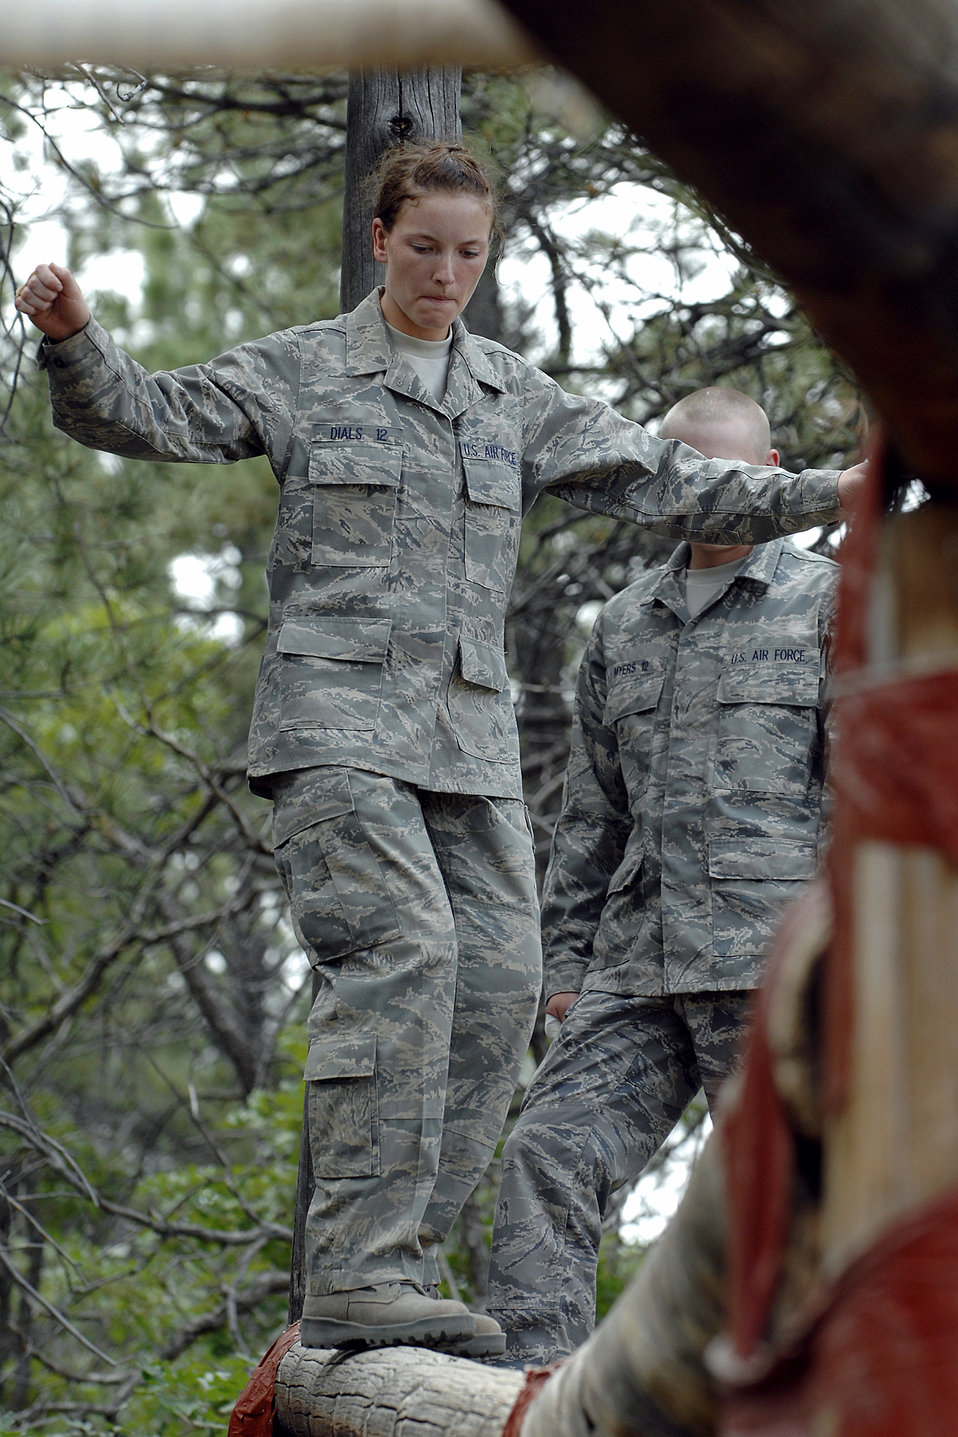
New cadets discover Jacks Valley

U.S. Air Force Academy Basic Cadet Katherine Dials traverses the confidence course July 15 at the Jacks Valley training area near Colorado Springs, Colo., during the field training portion of basic training.